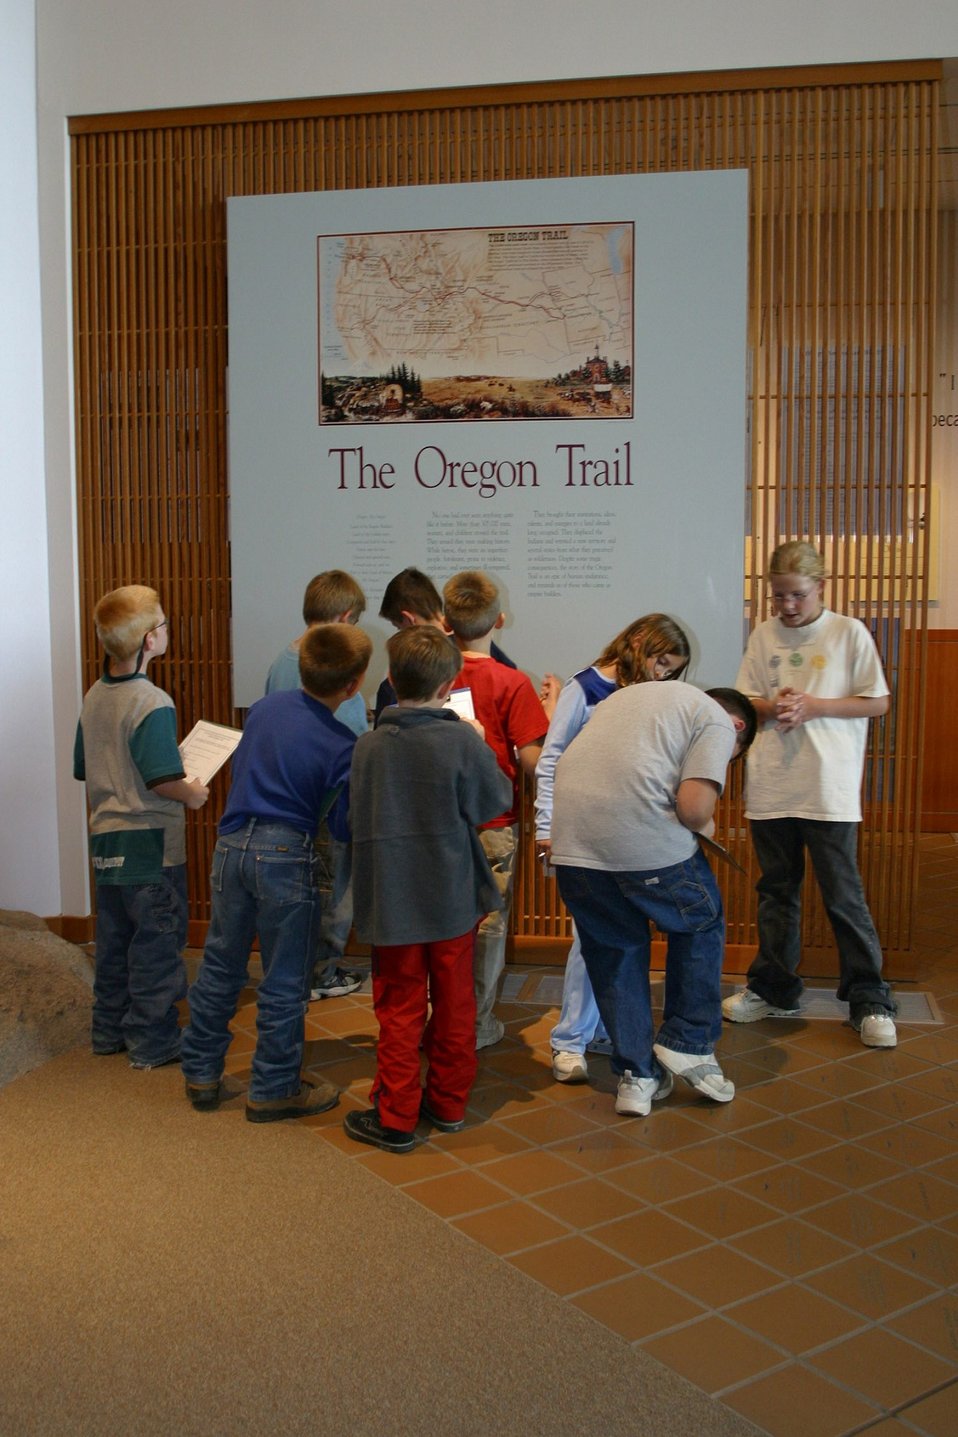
Hundreds of school children visit the National Historic Oregon Trail Interpretive Center every year.